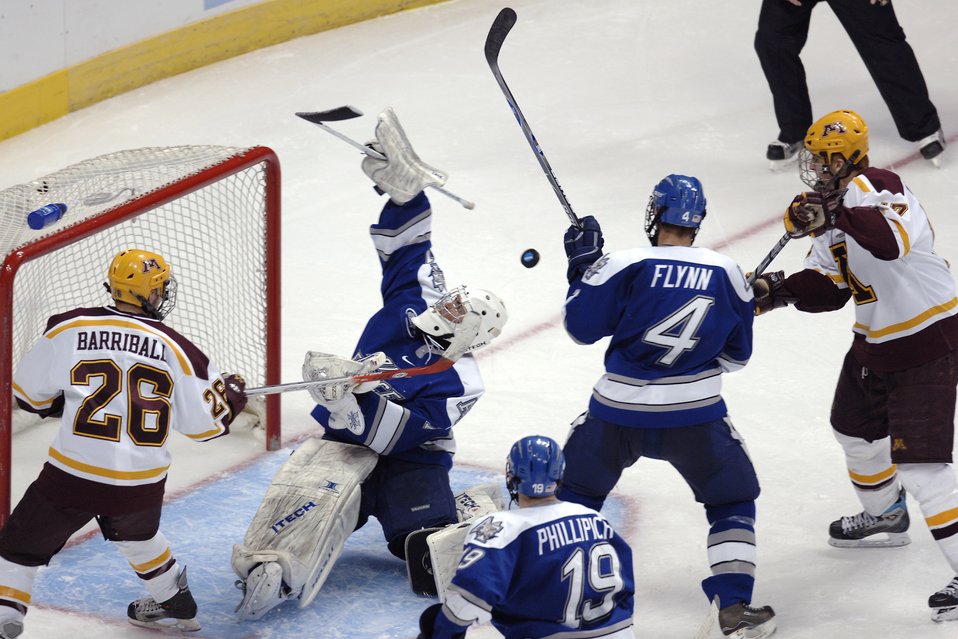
Gophers ground Falcons season during third period rally

Falcon goaltender Andrew Volkening makes a blocker pad save in heavy traffic during the NCAA West Regional March 24 at the Pepsi Center in Denver. The freshman net minder made 33 saves in Air Force's 4-3 season-ending loss to the Minnesota Golden Gophers.